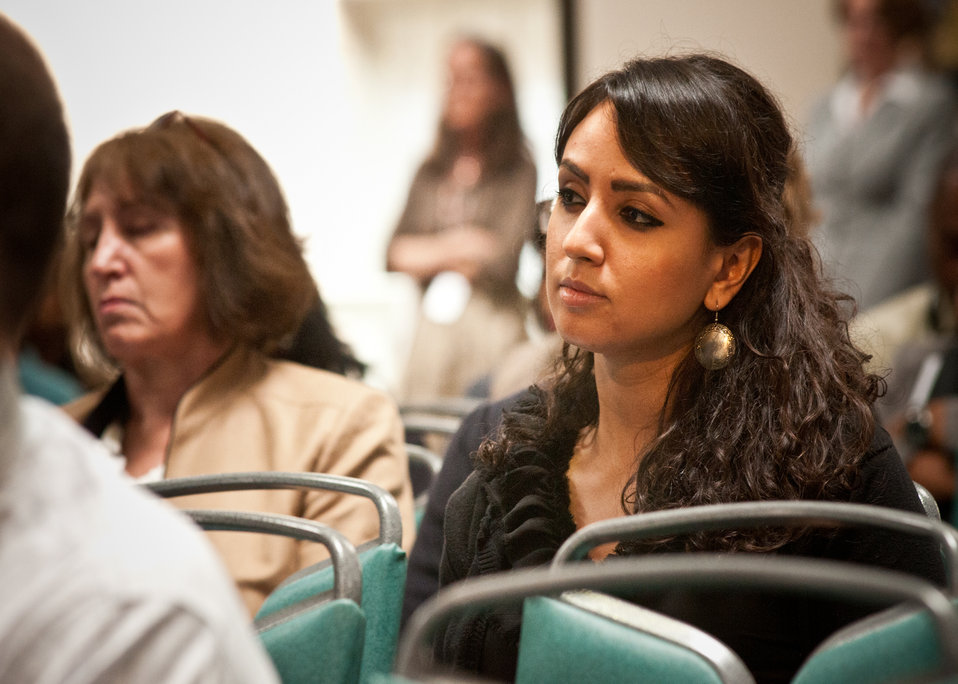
Agriculture Secretary Tom Vilsack offered U.S. Department of Agriculture (USDA) employees the opportunity to ask questions about the Blueprint for Stronger Service Initiative and hear directly from the Secretary Vilsack during the Ask The Secretary event held in the South Building Cafeteria, in Washington, D.C., on Wednesday, March 21, 2012, The Blueprint for Stronger Service Initiative aims to build a modern and efficient service organization that is closely timed with technological innovations - and better suited to respond to 21st century agricultural challenges.